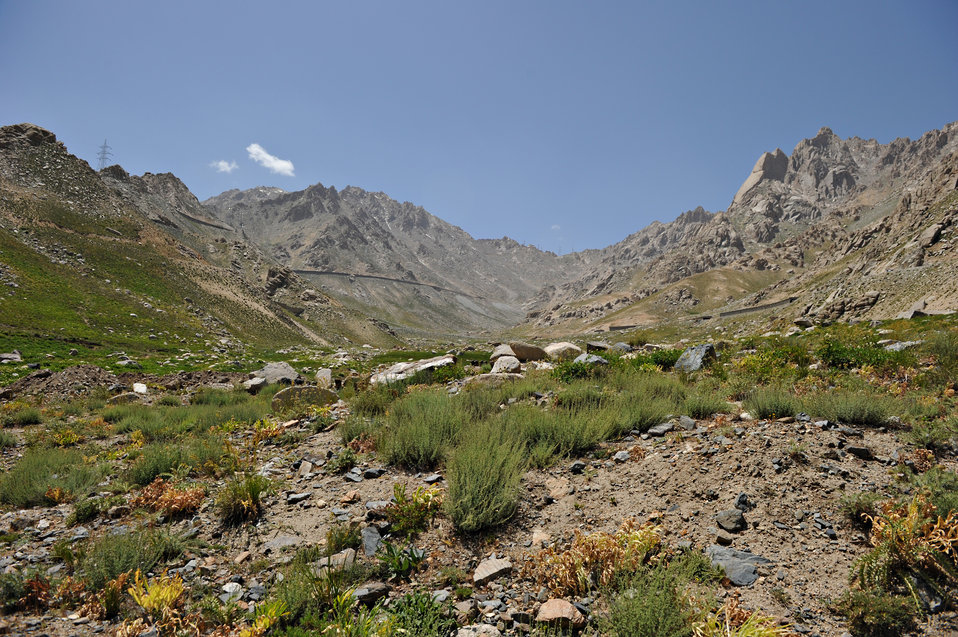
Near the South end of the Salang Tunnel on the border of Parwan and Baghlan Provinces, Afghanistan, on Wednesday, June 15, 2011. (S.K.Vemmer/Department of State)